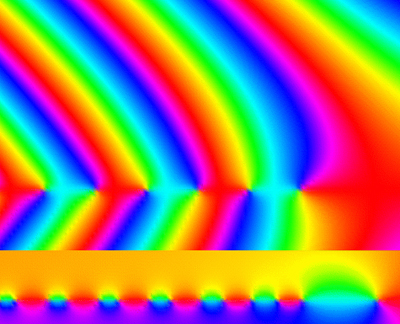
Gamma Function Graph

Graph showing part of the complex number phase of the gamma function and a related function. One of the most important of the 'special functions' discovered in the 18th century, the gamma function is related to the more familiar factorial function and plays a role in a wide variety of applications of probability and statistics. Here the pattern resembles that of fluid flow near the end of a line of vortices.